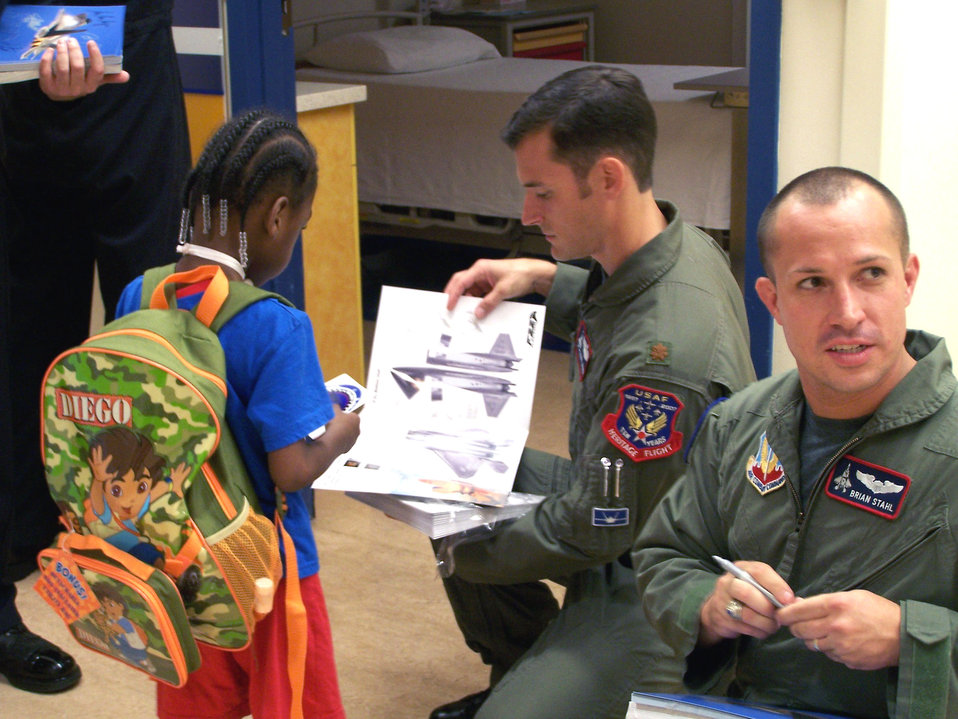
F-22 demo team inspires at children's hospital

Maj. Paul Moga, the Air Force's sole F-22 Raptor demonstration pilot, explains how to construct paper models of the Raptor, while F-22 safety observer, Capt. Brian Stahl, signed autographs for patients at La Rabida Children's Hospital in Chicago Aug. 15.